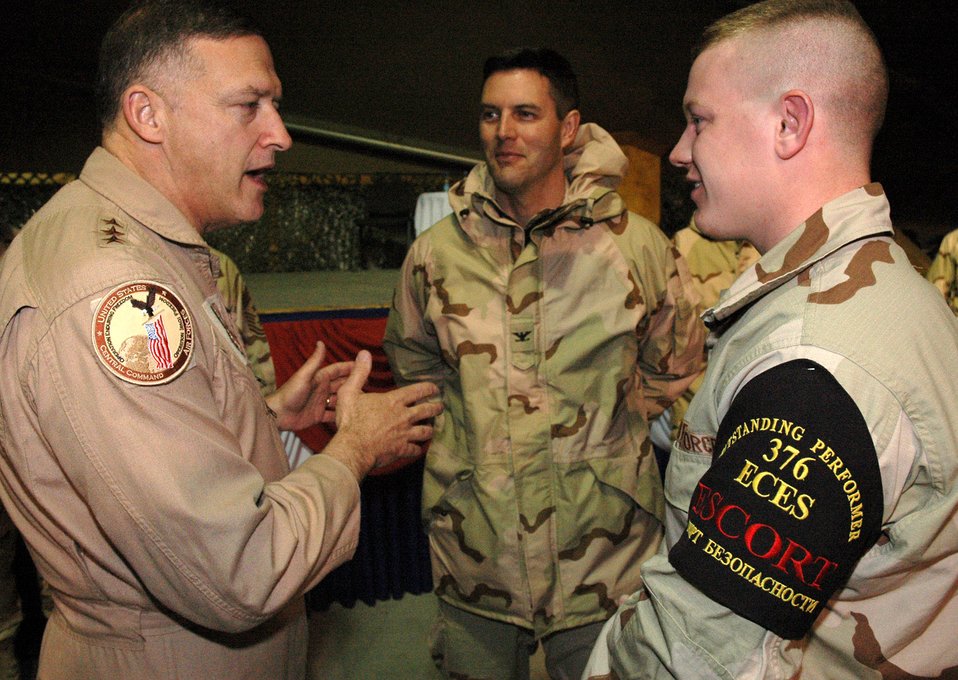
General North visits Manas Air Base

Lt. Gen. Gary North thanks Airman 1st Class Anthony Corman for his contributions as a host-country-national escort at Manas Air Base, Kyrgyzstan. Airman Corman is deployed to the 376th Air Expeditionary Wing from the 436th Maintenance Squadron at Dover Air Force Base, Del. General North is the commander of 9th Air Force and U.S. Central Command Air Forces at Shaw Air Force Base, S.C.